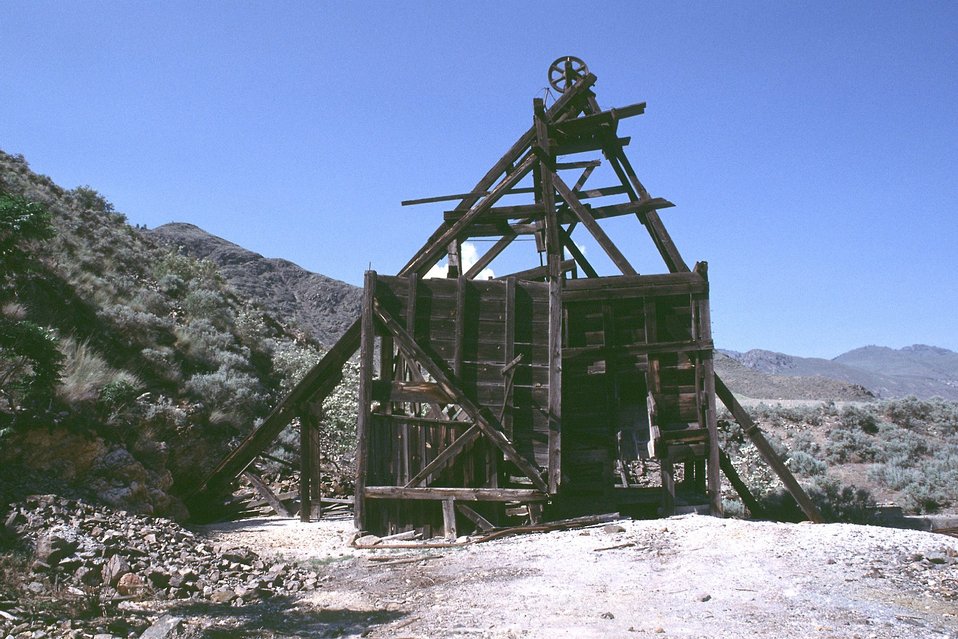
AML. Hoist at Kaaba-Texas Mine, Spokane District, Washington.